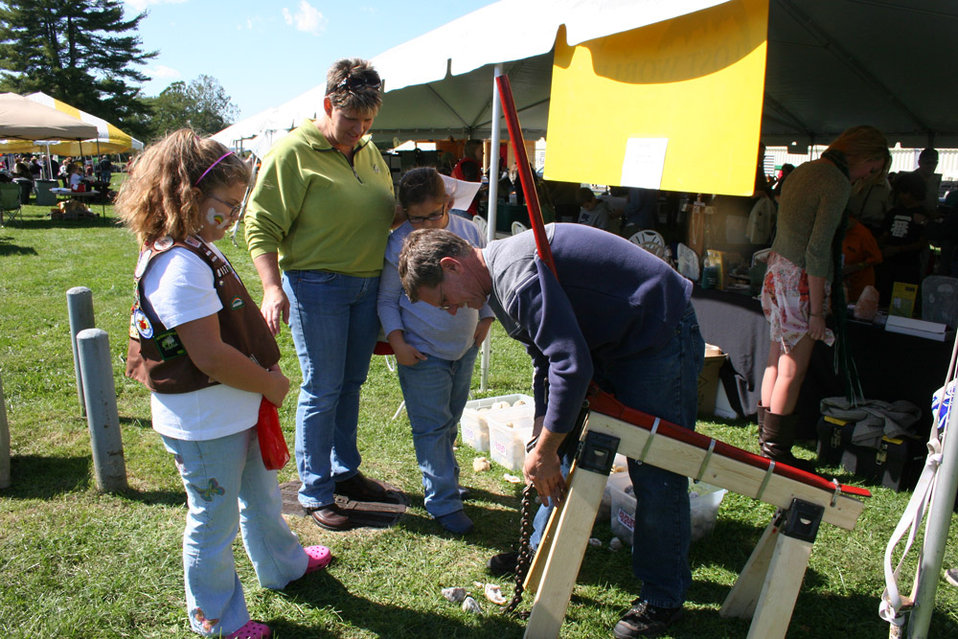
Freshwater Folk Festival

The 5th Annual Freshwater Folk Festival at White Sulphur Springs National Fish Hatchery in West Virginia.Credit: USFWS